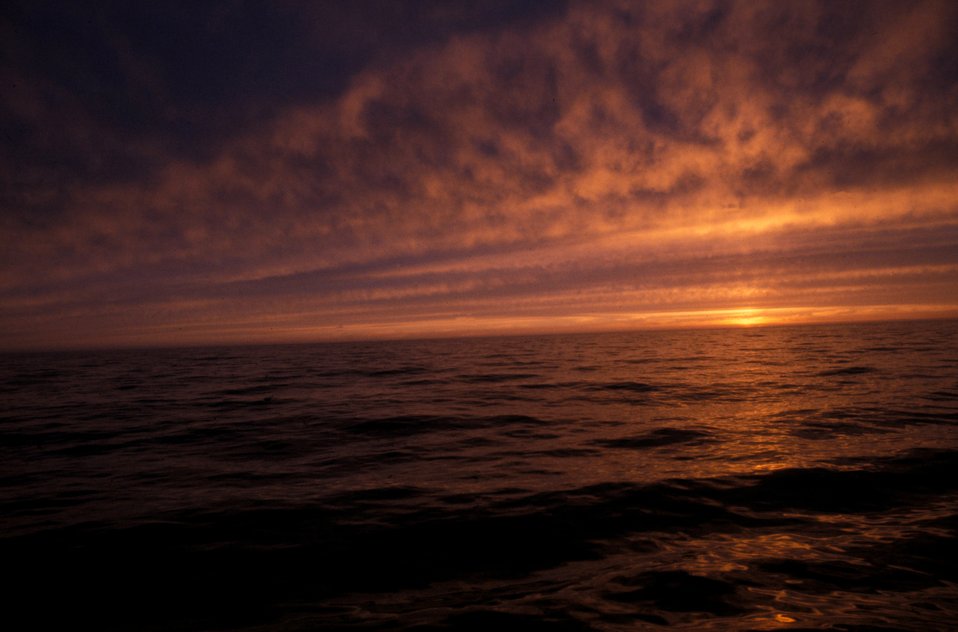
A Bering Sea sunset